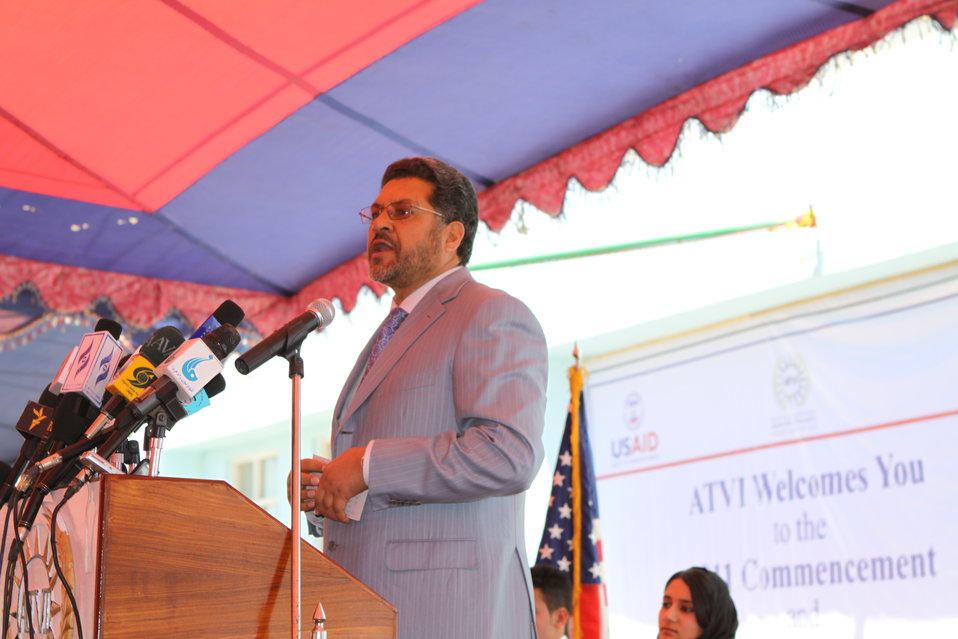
100522 ATVI Graduation 083